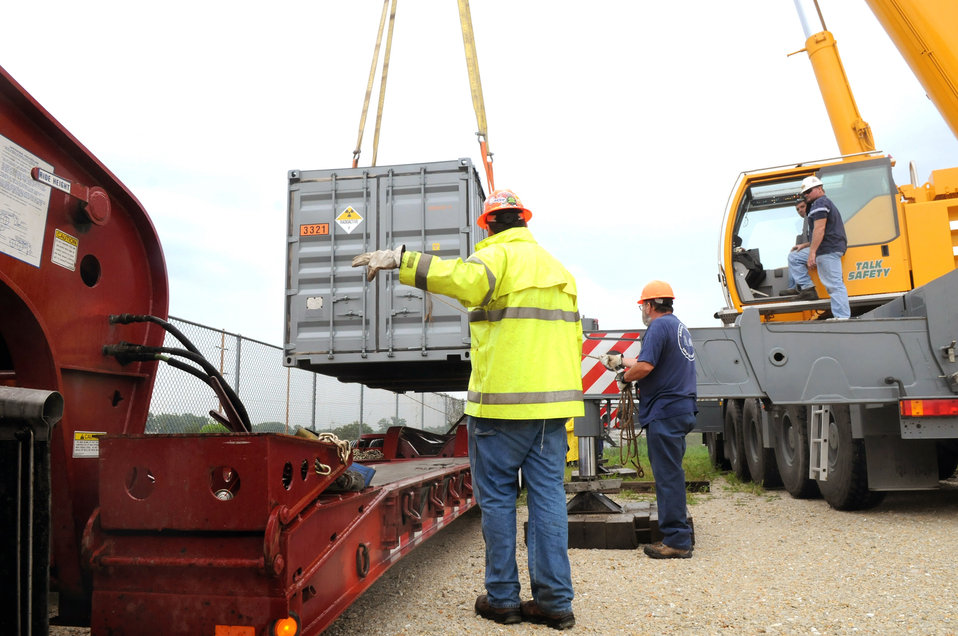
At Argonne, workers prepare and load a shield plug crucial to the former Chicago Pile-5 Reactor, which has long been dismantled.